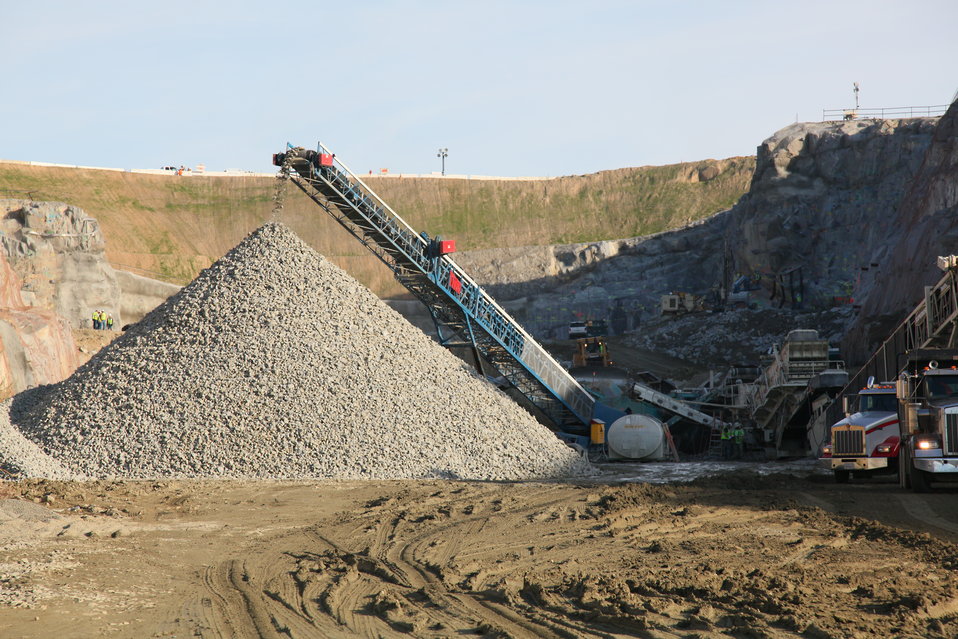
Crusher to move out of the pit

Excavation of the auxiliary spillway continues at Folsom Dam in Folsom, Calif., Nov. 22, 2011.

“Work starts at 6:30 a.m. and ends at 2:00 a.m., covering two 10-hour shifts six days a week,” said project engineer Larry Smith with the U. S. Army Corps of Engineers Sacramento District. Smith added that the rock crusher (pictured) will move out of the spillway construction area on Dec. 5, to make way for the concrete batch plant. The plant will take four months to assemble and will mix concrete for the spillway control structure, Smith added. Once complete, the spillway will allow Folsom Dam to release water sooner and more safely.

The project is part of the Folsom Dam Joint Federal Project, a joint effort of the U.S. Army Corps of Engineers Sacramento District, the U.S. Bureau of Reclamation, the Central Valley Flood Protection Board and the Sacramento Area Flood Control Agency to improve the safety of the dam and reduce flood risk for the greater Sacramento area.